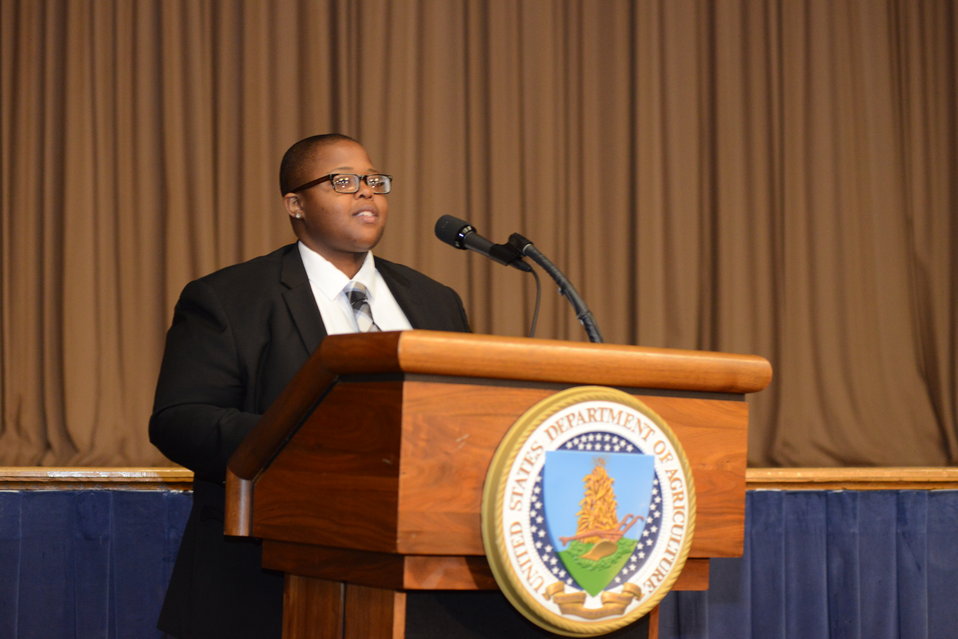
U.S. Department of Agriculture (USDA) Assistant Secretary Civil Rights (ASCR) Special Assistant Ashlee Davis introduces National Gay and Lesbian Task Force Senior Counsel Kylar Broadus at the 2014 Lesbian/Gay/Bisexual/Transgender (LGBT) Pride Observance event held in the Jefferson Auditorium at USDA in Washington, D.C. on Thursday, Jun. 5, 2014.